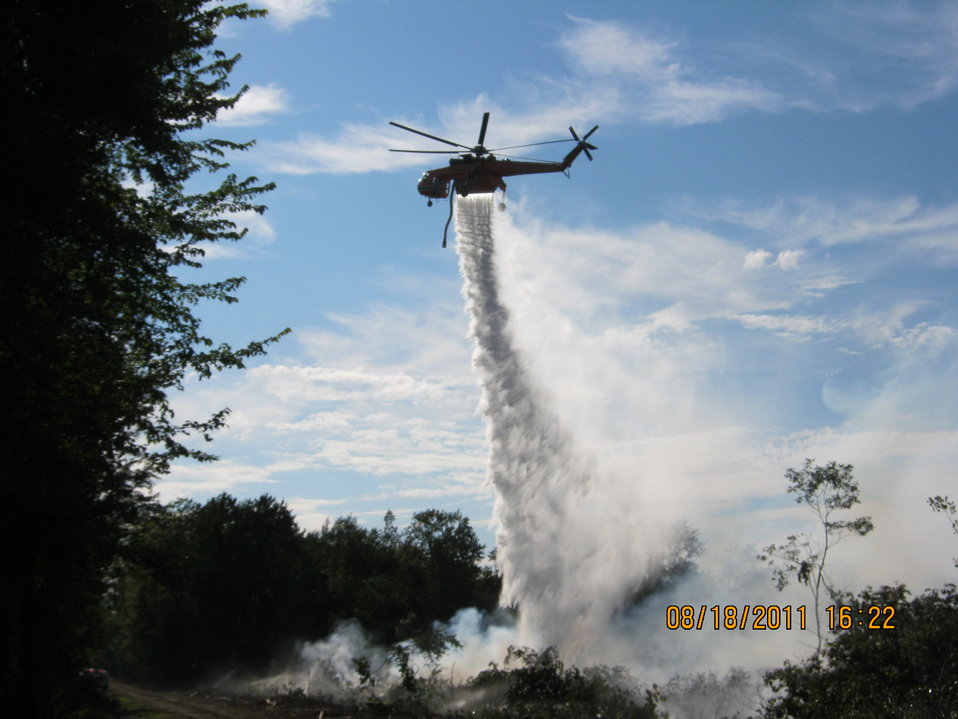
The plume we like to see

Suffolk, VA, August 2011. Water is a welcome sight for firefighters working on the Lateral West Fire in Great Dismal Swamp. Over 1.3 million gallons have been dropped from helicopters.